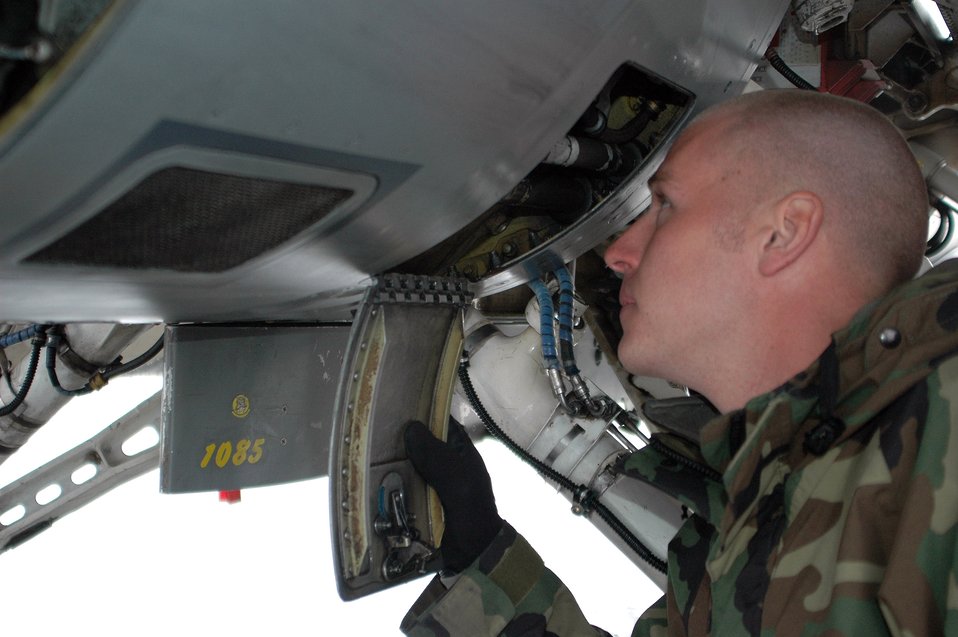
Weather can't stop desert-dwelling Airmen at Red Flag-Alaska

Senior Airman Richard Adamowich performs preflight inspections on an F-16 Fighting Falcon April 13 on the flightline at Eielson Air Force Base, Alaska. Airmen from the 61st Fighter Squadron at Luke AFB, Ariz., are at Eielson AFB in support of Red Flag-Alaska, a multi-service, multi-platform, combat-operations exercise involving the coalition forces of France and Australia. Airman Adamowich is an avionics journeyman assigned to the 61st FS.